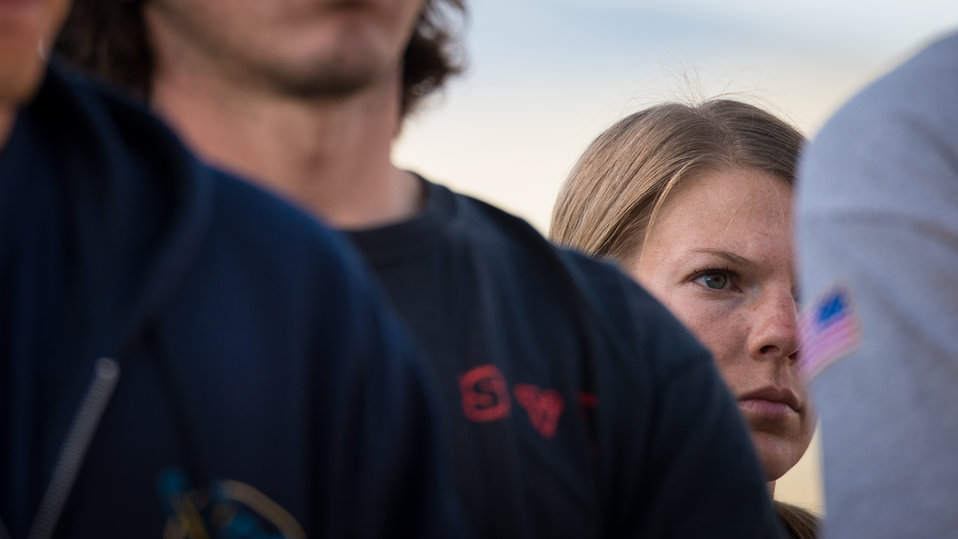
Veteran wildland firefighter rappeller Brianna Carollo listens closely to the morning safety briefing at the U.S. Department of Agriculture (USDA) U.S. Forest Service (USFS) National Helicopter Rappel Program’s Rappel Academy at Salmon Air Base in Salmon, ID on Wednesday, May 14, 2014. From May 12, 2014, 72 veteran rappellers from all over the nation, 30 support staff, and three helicopters with flight crews attend the training at Salmon Air Base. Participants will rappel into the Perreau Creek area. The annual training is delivered in accordance with the National Rappel Operations Guide; strengthen leadership, teamwork, and communications within the rappel community, and produces quality aerial delivered firefighters for use in fire and aviation operations. The USDA Forest Service National Helicopter Rappel Program’s primary mission is initial attack. Rappel crews may be utilized for large fire support, all hazard incident operations, and resource management objectives.